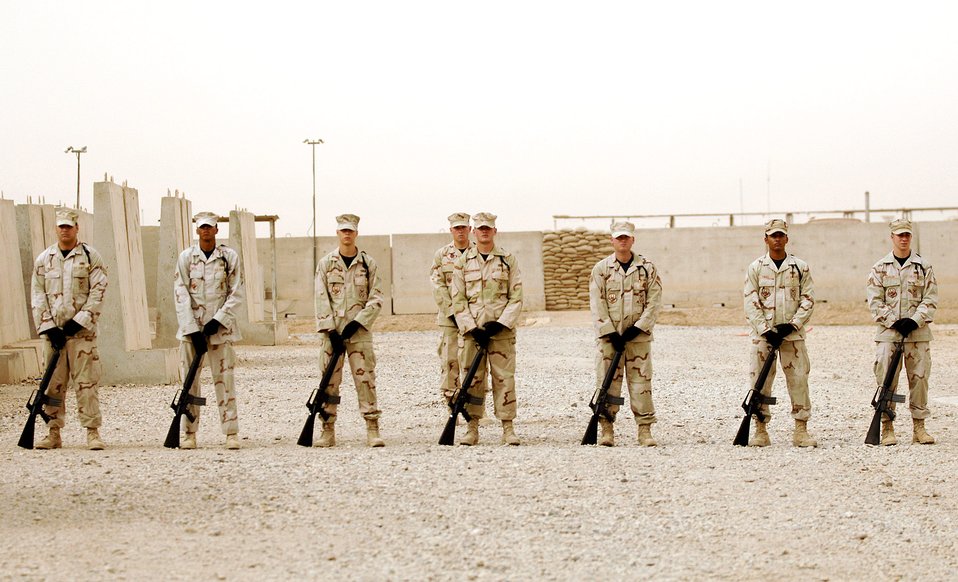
Honoring a fallen Airmen

Honor guard members from the 407th Expeditionary Group at Ali Air Base, Iraq, prepare for a 21-gun salute during a fallen Airmen ceremony May 28 in remembrance of Staff Sgt. John Self at Ali Air Base. Sergeant Self, a security forces member assigned to the 732nd Expeditionary Security Forces Squadron at Camp Bucca, Iraq, was killed May 14 by an improvised explosive device while on patrol.